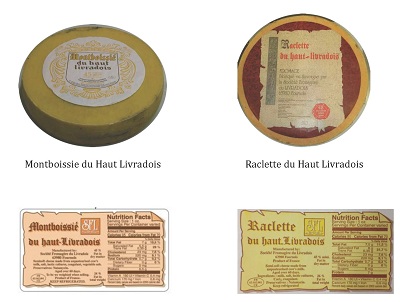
RECALLED – Raclette and Montboissie cheeses

May 7, 2014 – Product Recall –STE Fromagere Du Livradois Voluntarily Recalls Raclette Cheese and Montboissie Cheese for Possible Health Risk.